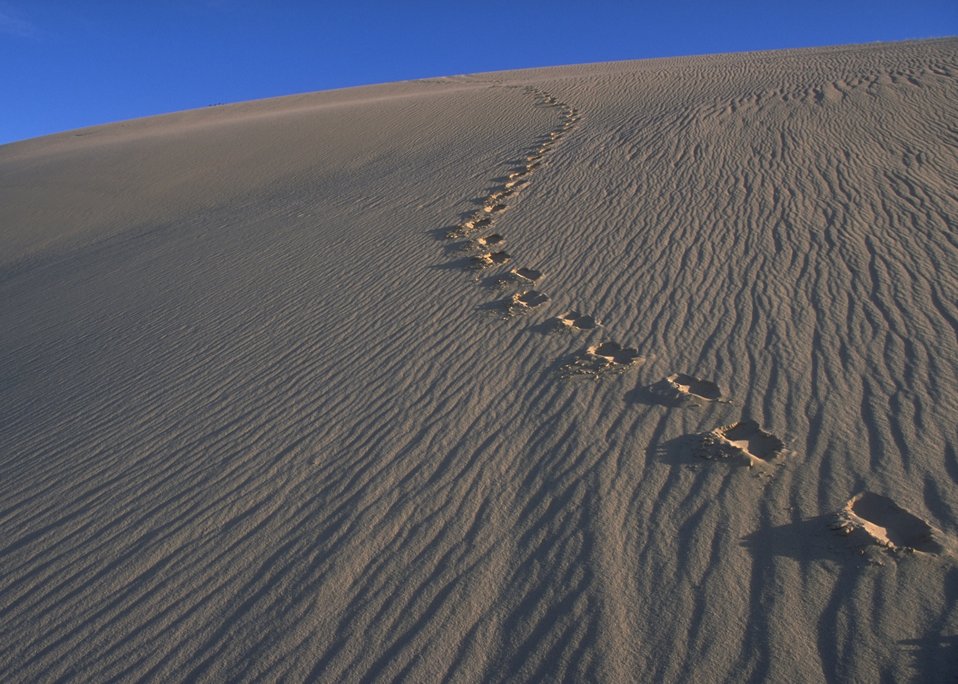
Sand dunes along the Alcova/Seminoe Back Country Byway, Rawlins Field Office.